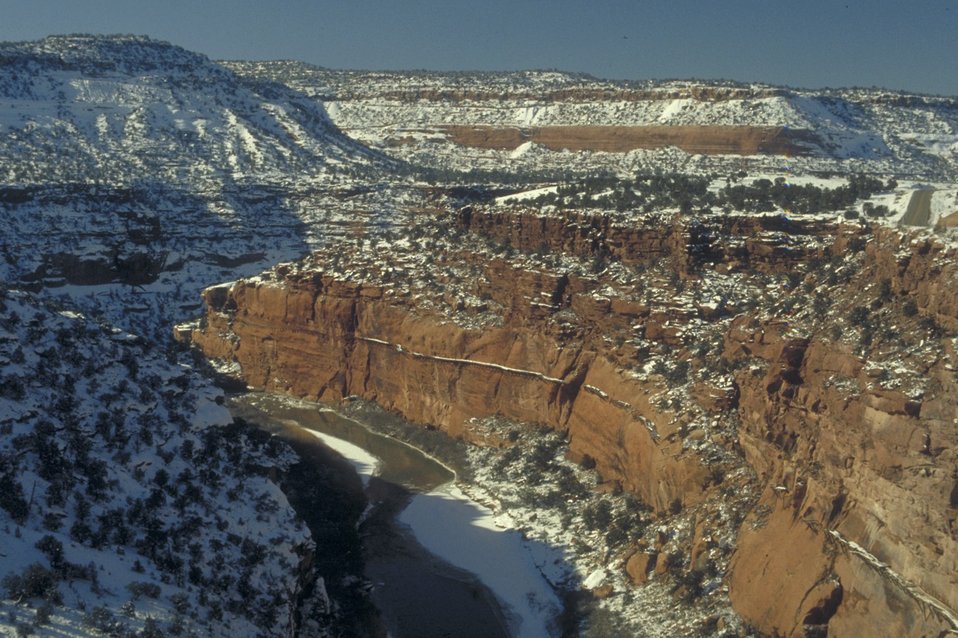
Dolores River